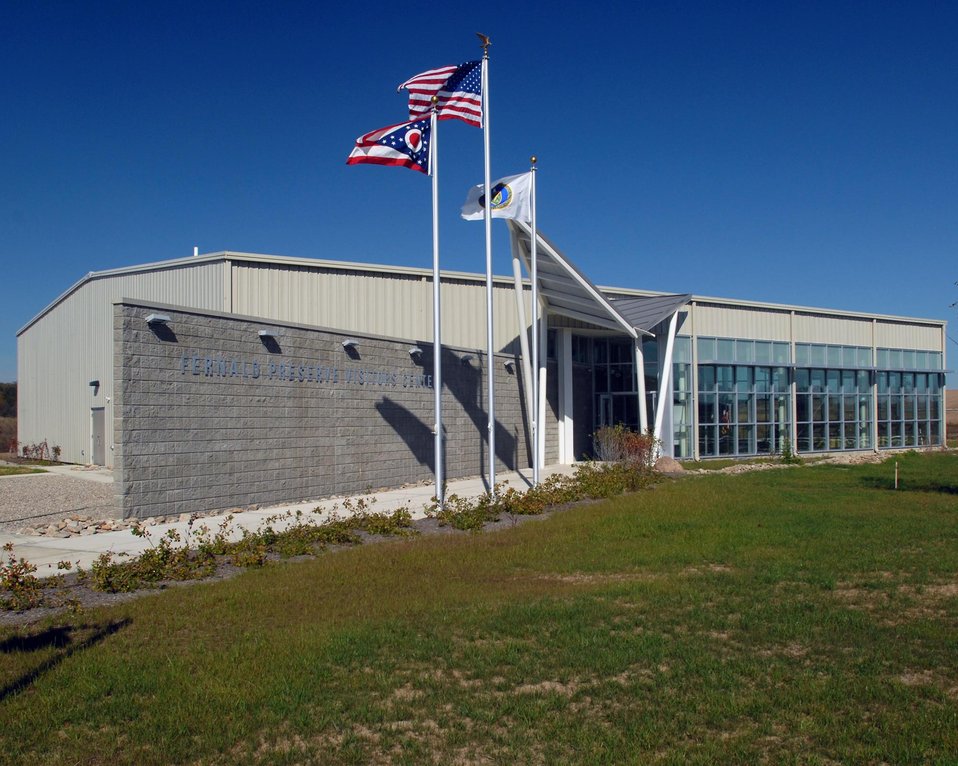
Southwest corner of the Fernald Preserve Visitor Center, the first building in Ohio to receive platinum-level certification from the U.S. Green Building Council, the organization's highest certification.